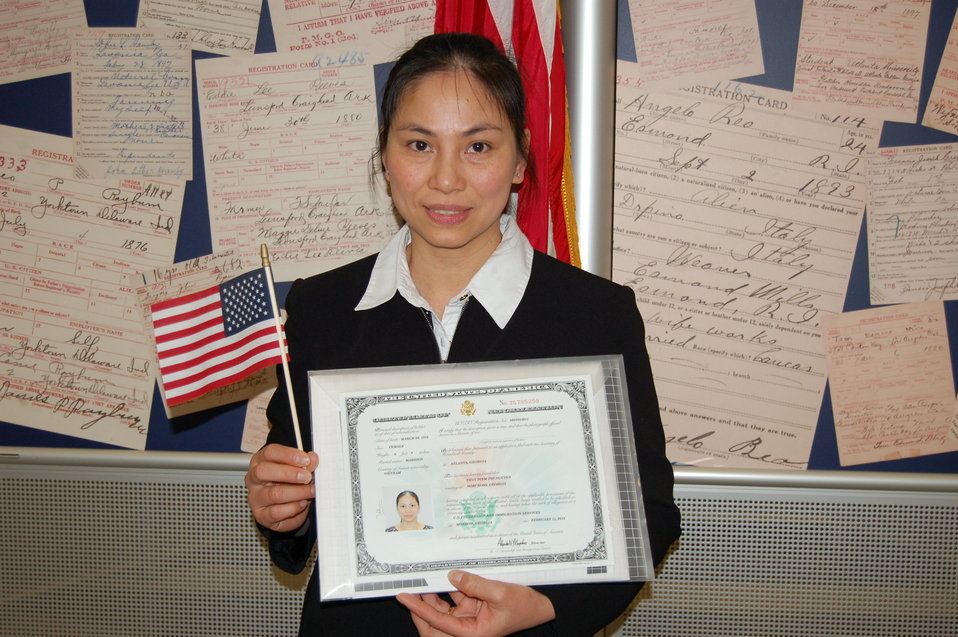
New Citizens